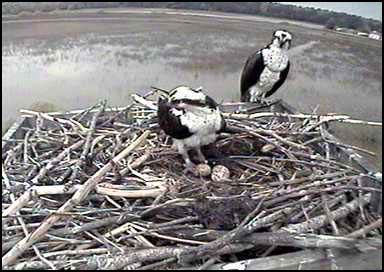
Osprey cam at Blackwater

Ospreys on a nest at Blackwater National Wildlife Refuge in Maryland as seen through a webcam.